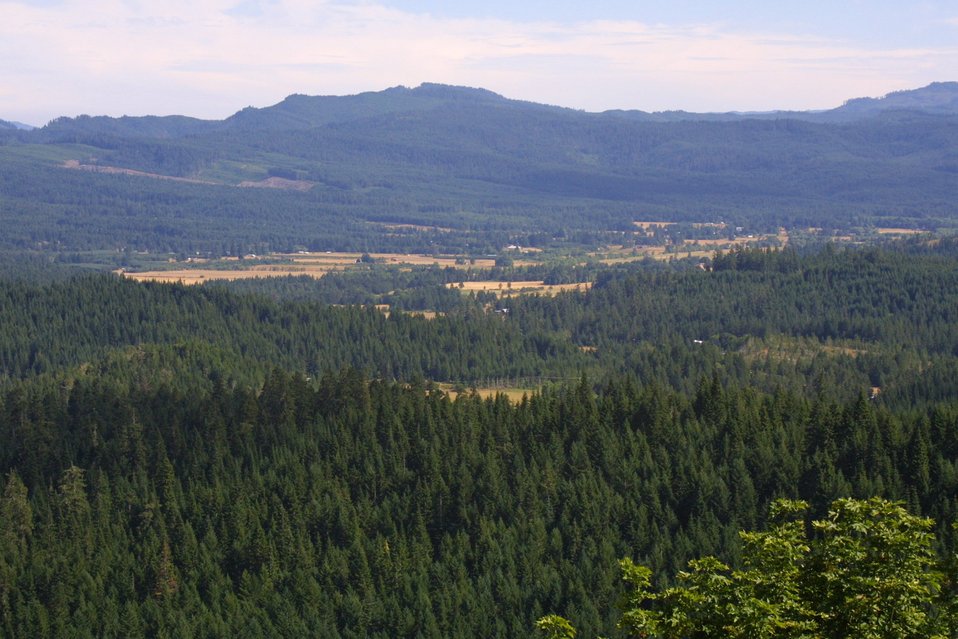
Camas East Timber Sale in Late Successional Reserve.